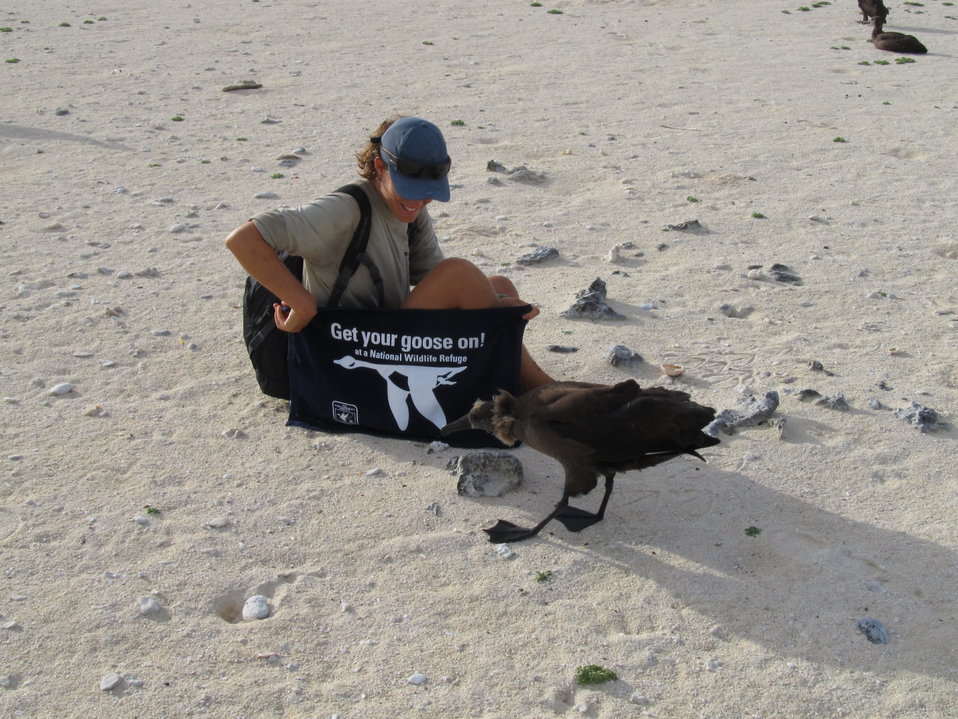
Get Your Goose On! - Albatross Style

Photo taken at Laysan Island in the Papahanaumokuakea Marine National Monument, Hawaiian Islands National Wildlife Refuge. Laysan is located approximately 800 miles northwest of Honolulu, Hawaii and is a remote field camp staffed year round for habitat restoration and population monitoring.